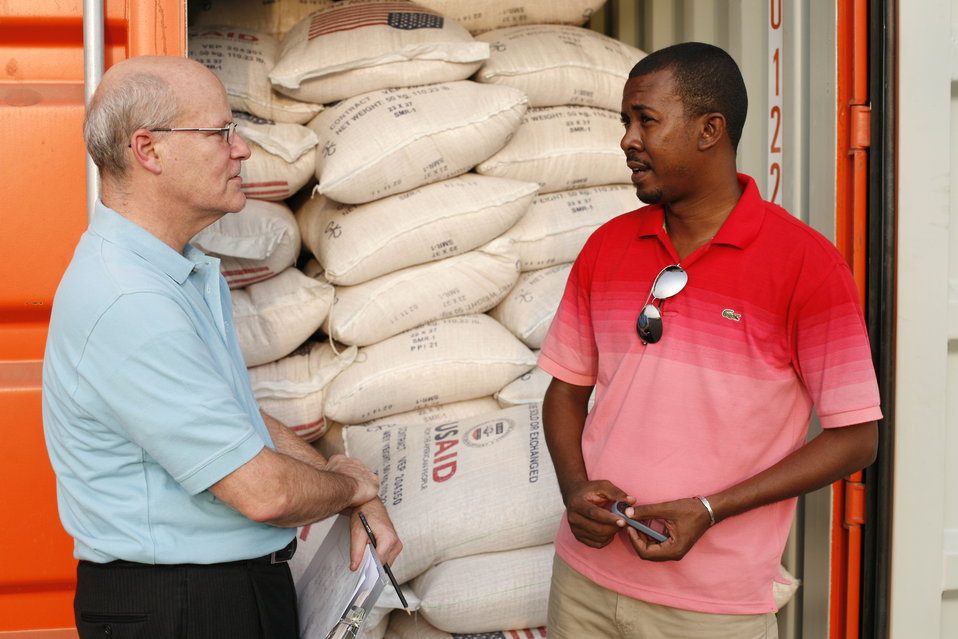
USAID Deputy Administrator Steinberg Reviews U.S. Food Aid in Djibouti

U.S. Agency for International Development (USAID) Deputy Administrator Donald K. Steinberg, left, reviews U.S. food aid in Djibouti, Republic of Djibouti, on July 8, 2011.